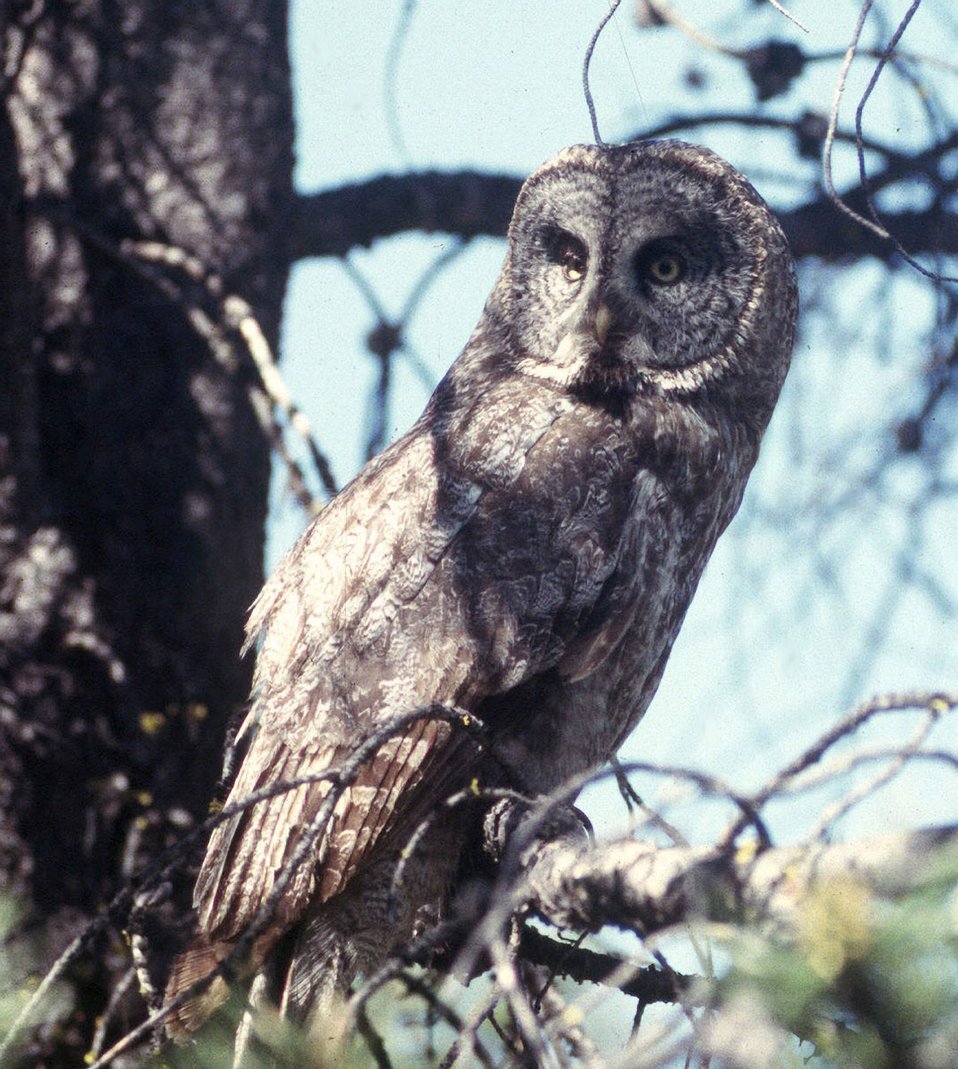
Great Gray Owl (Strix nebulosa) near the Sun River Area on the Deshcutes National Forest in eastern Oregon.